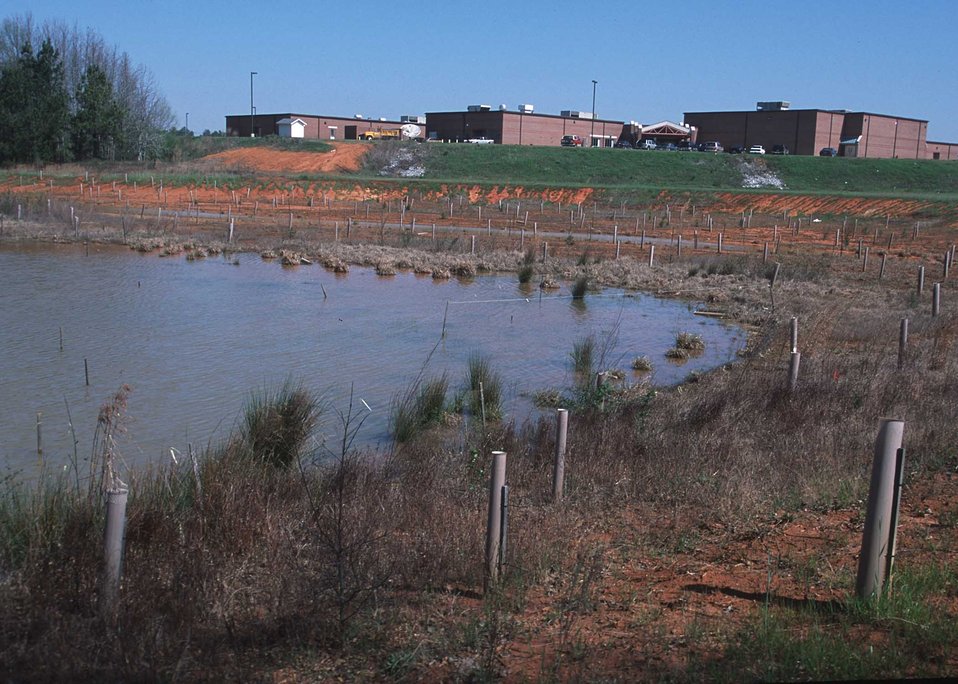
Wetland project that is part of the Barnsville Recreation Center and outdoor classrom. The trail and wetland serve as an outdoor classroom and has a nature trail through natural and constructed wetlands. Assistance also provided by RC&D.